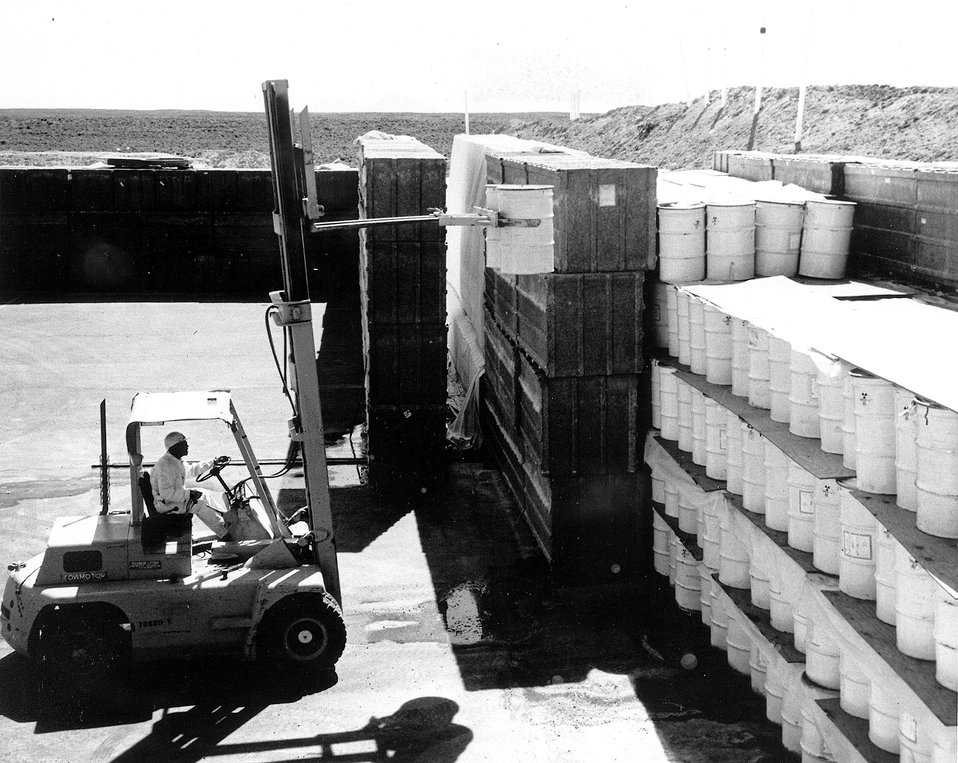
Stacks of 50-gallon drums and fiberglass-covered boxes containing wastes contaminated with radioactive transuranic materials (mostly low-level, long-lived plutonium) are stacked on an asphalt pad in the waste storage area at the National Reactor Testing Station, Idaho. Circa 1974.